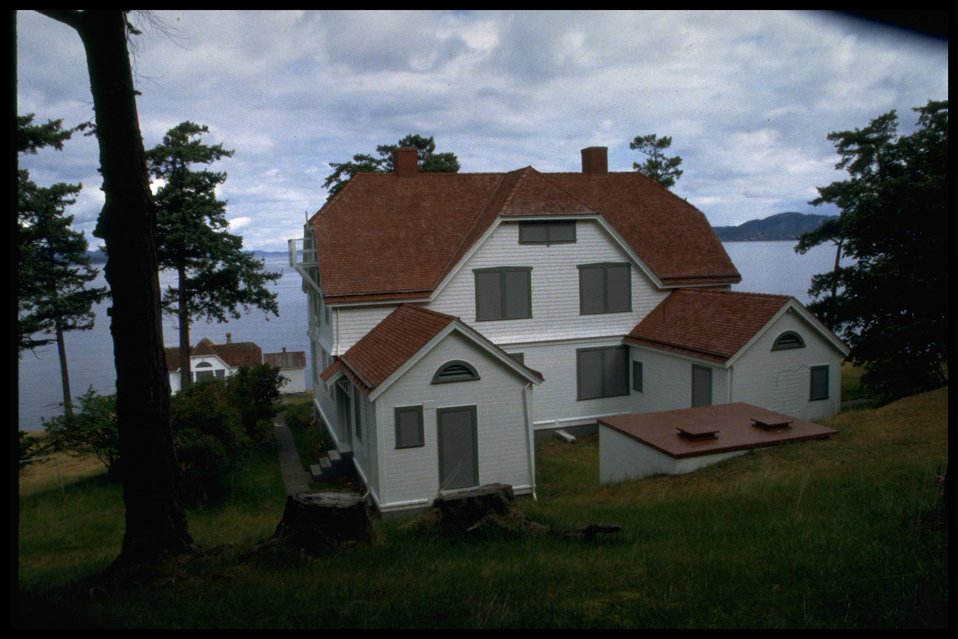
Living quarters at Turn Point. One in a series of ten shots of the living quarters.